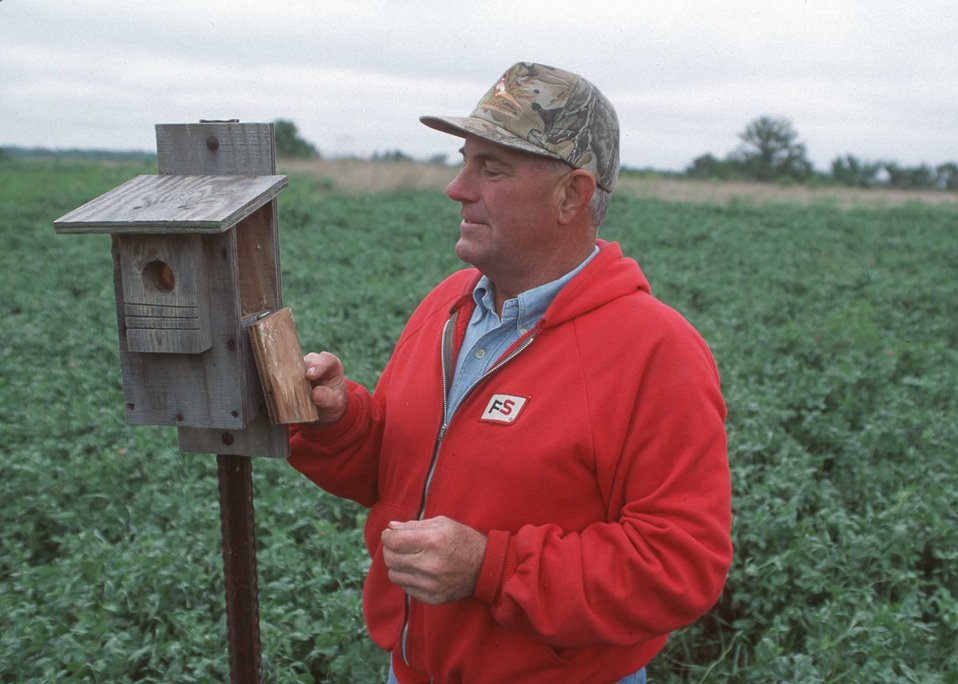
Peoria County, Illinois landowner is a conservation enthusiast, using many NRCS programs to enhance wildlife habitat on his farm and bringing school children on conservation farm tours every year.